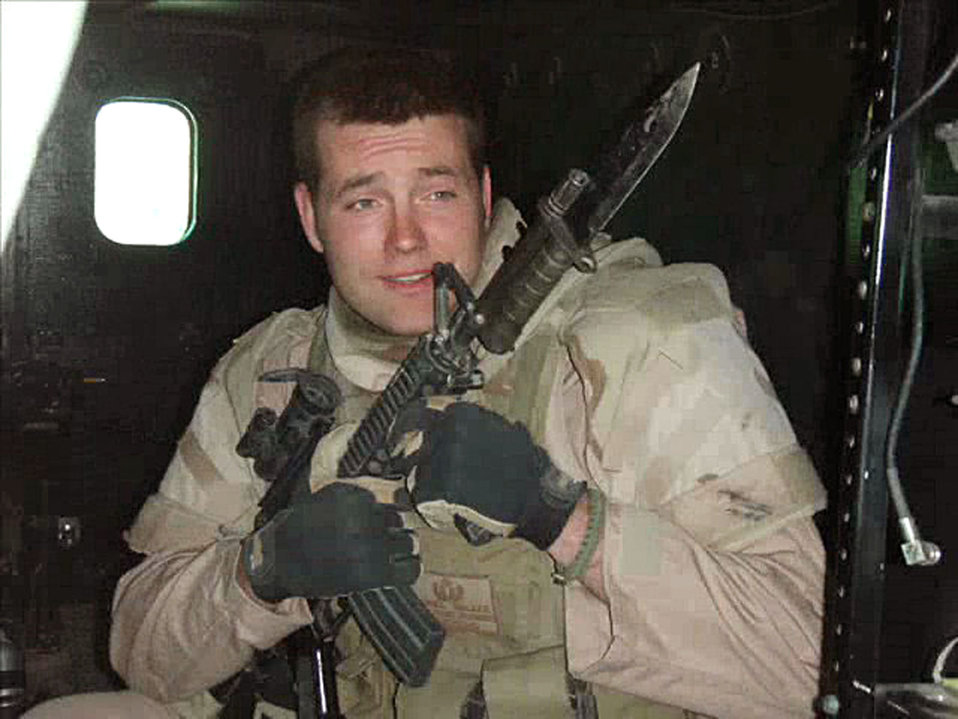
Hill mourns the loss of 3 Airmen

Senior Airman Daniel B. Miller Jr. was an explosive ordnance disposal Airman serving in Iraq and was killed defusing a car bomb when it detonated Jan. 7. He was deployed from the 775th Civil Engineer Squadron at Hill Air Force Base, Utah.